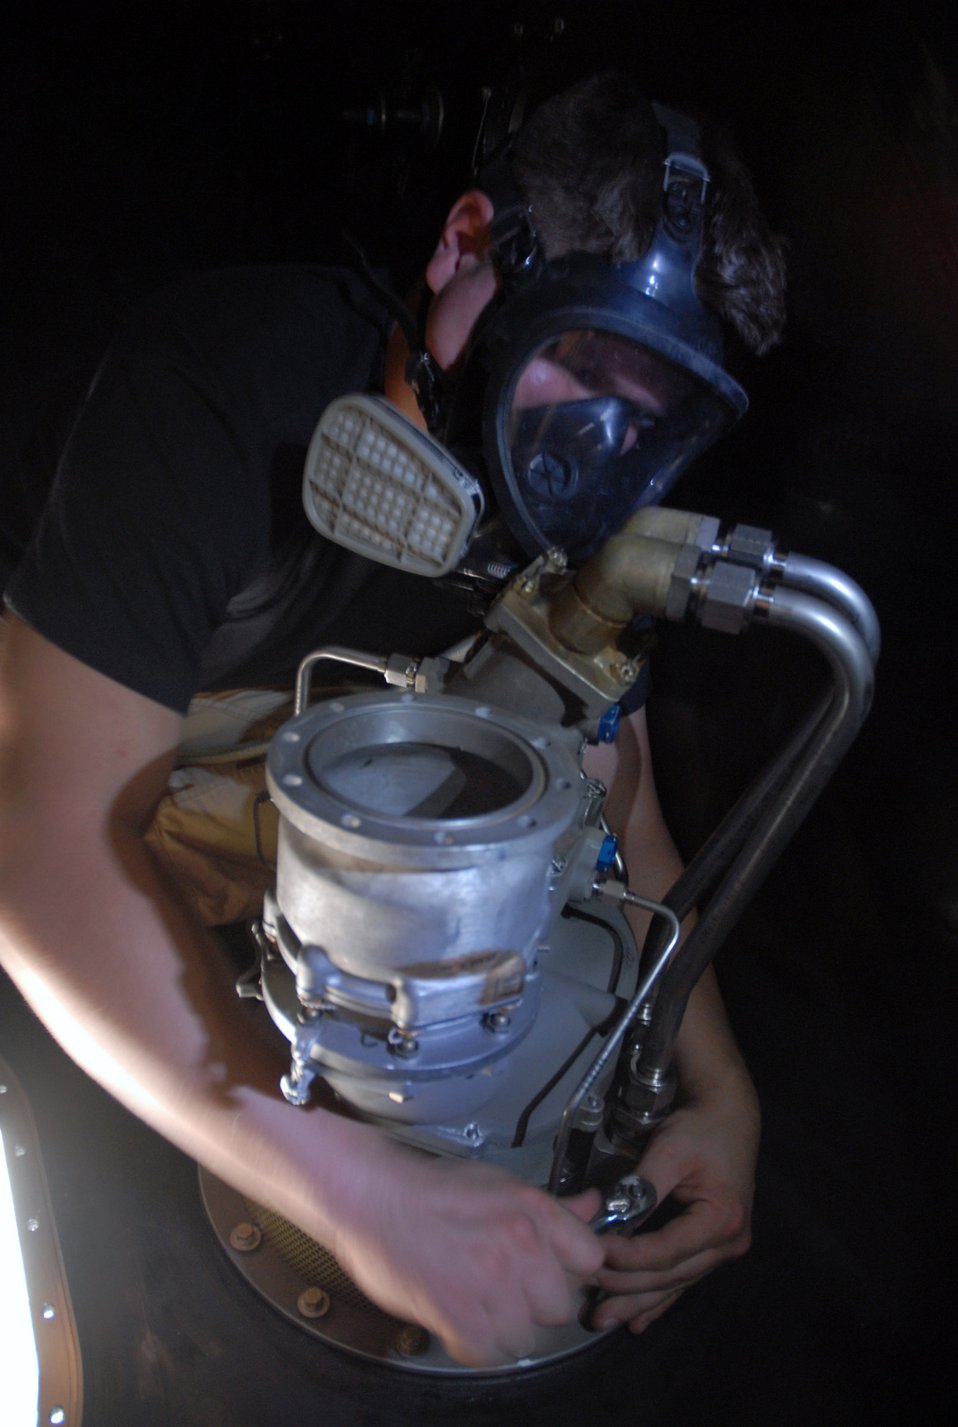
Pump it up: Airman goes with the flow

Wearing protective equipment in case of fuel fumes, Airman 1st Class Shaun Carrig installs an air refueling pump in the number three forward body fuel tank of a KC-135 Stratotanker Nov. 17 in Southwest Asia. The new fuel pump with ensure better gas flow for the aircraft. Airman Carrig is a fuel systems journeyman with the 379th Expeditionary Aircraft Maintenance Squadron and is deployed from Grand Forks Air Force Base, N.D.